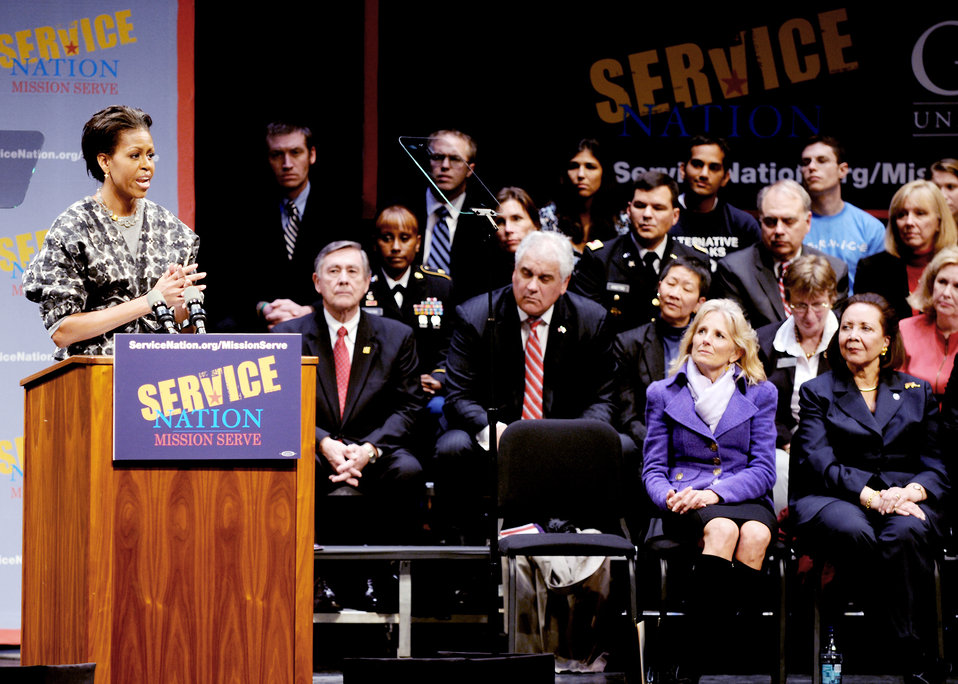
First lady urges vets to join volunteer campaign

First lady Michelle Obama speaks to an audience of students, university leaders and servicemembers at a celebration of Veterans Day at George Washington University in Washington, D.C., Nov. 11. She shared her thoughts on public service, from military service to local community projects.